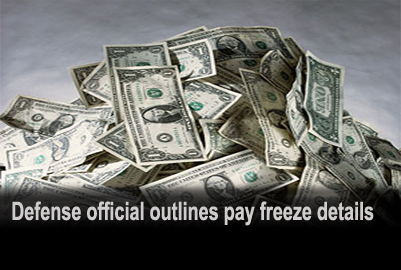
Pay Freeze

Defense official outlines pay freeze details